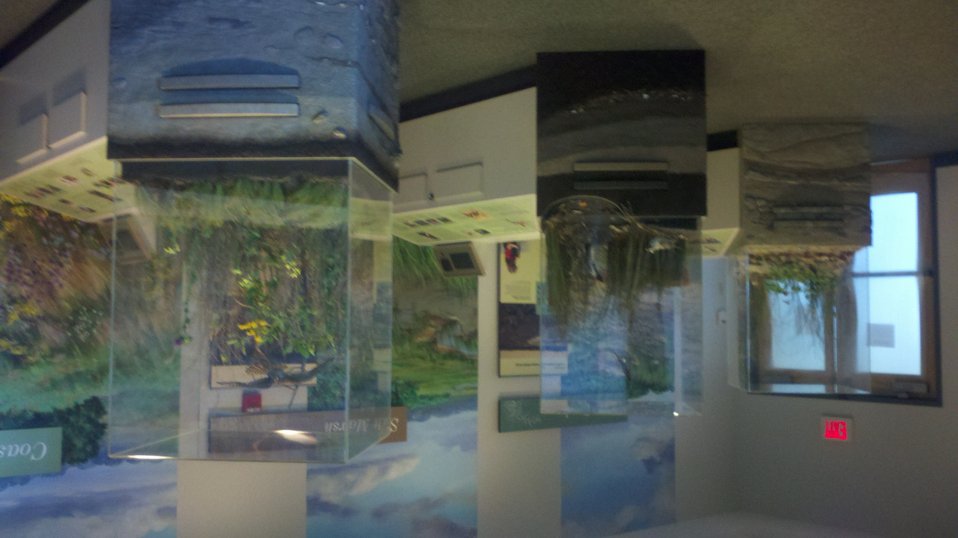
Exhibits

Newly renovated exhibits at Sachuest Point National Wildlife Refuge visitor center, which re-opened on August 24, 2012.